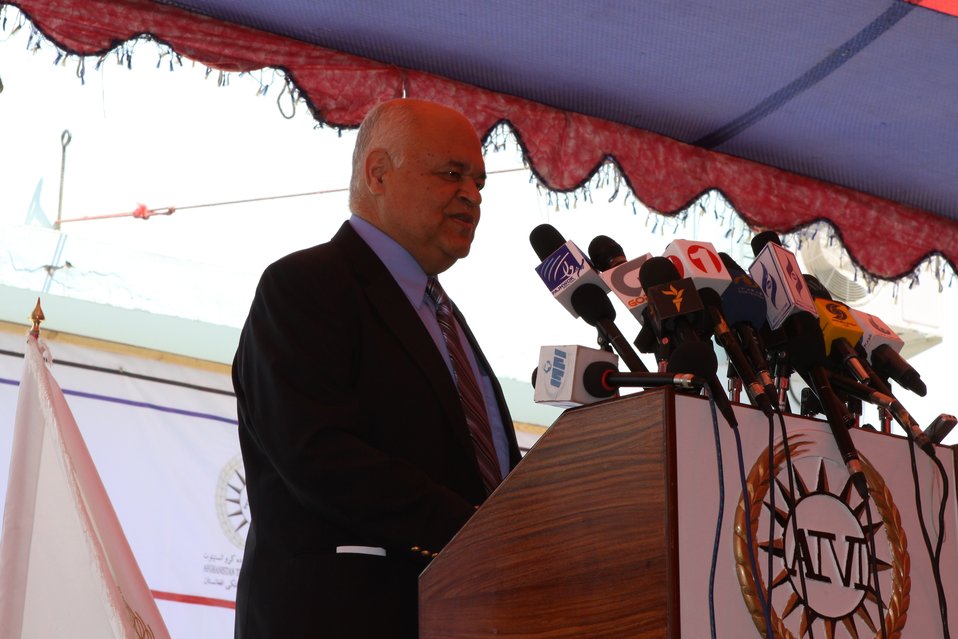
100522 ATVI Graduation 063